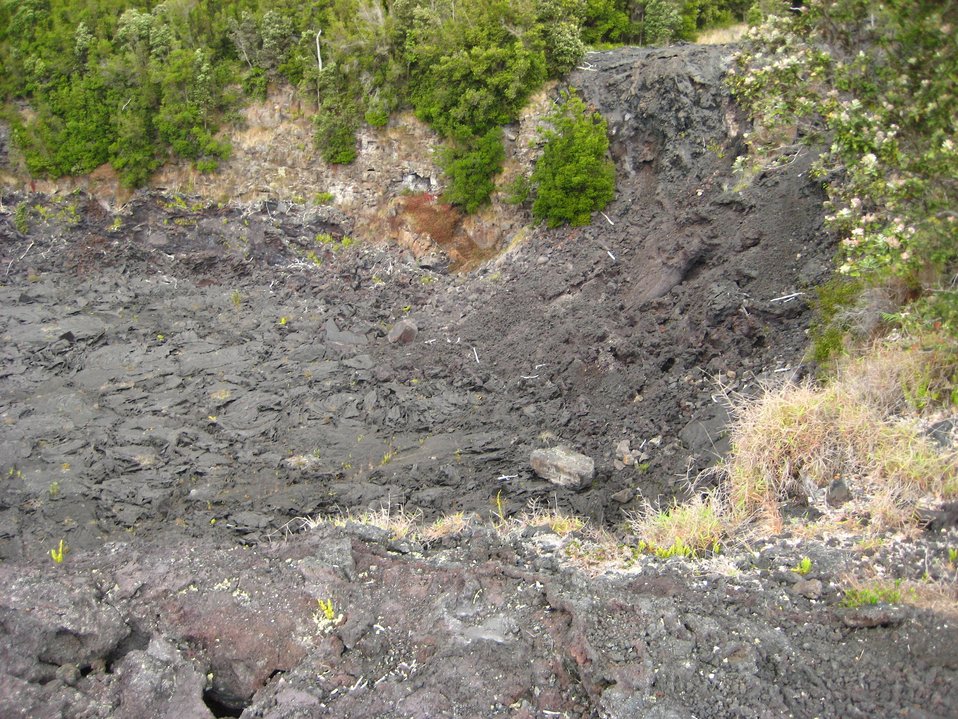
View # 1 of a frozen in place lava fall